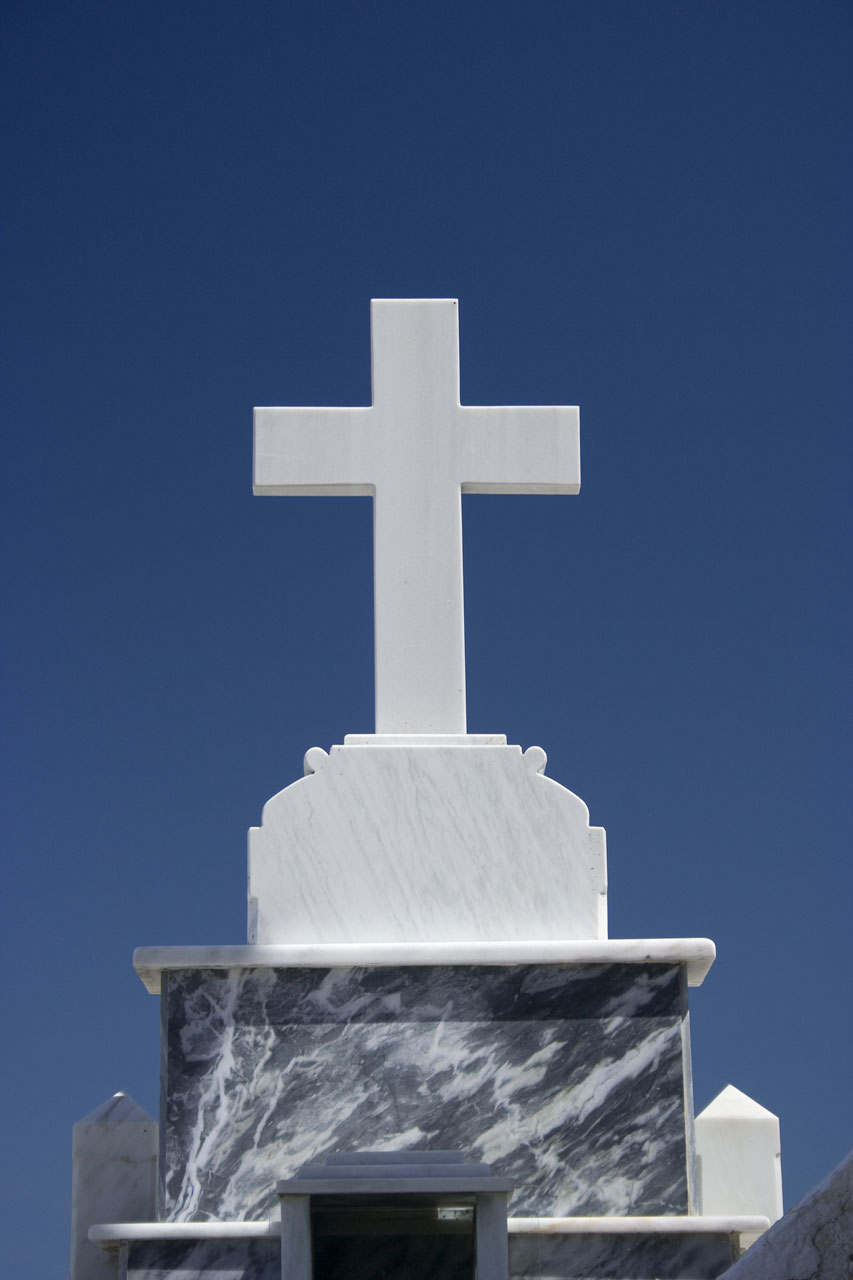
Cross

White cross against blue sky.